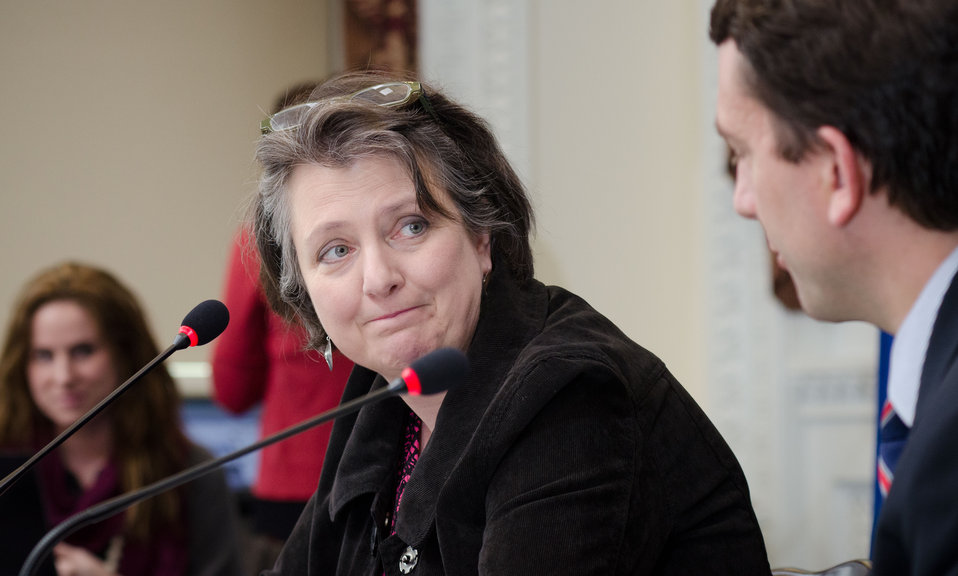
Agriculture Deputy Secretary Kathleen Merrigan and Director, White House Office of Public Engagement Jon Carson, during a Know Your Farmer Compass event that used twitter social media to continue the National Conversation on Local and Regional Food projects and how they offer economic opportunities to local farmers, ranchers and food entrepreneurs. The virtual conversation took place from the White House, in Washington, D.C., on Monday, March 5, 2012.